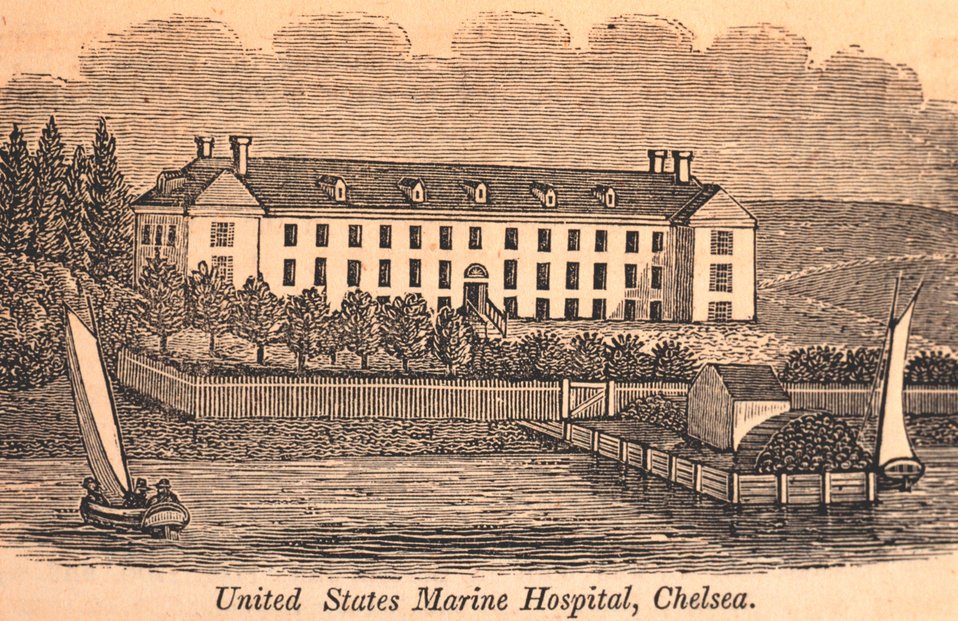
The United States Marine Hospital at Chelsea. The building was made of stone and built in 1827. Patients were sick and disabled seamen. Although run by the revenue collector of Boston and Charlestown, a physician and surgeon were appointed by the President of the United States. In: Historical Collections ... of Every Town in Massachusetts. 1841.